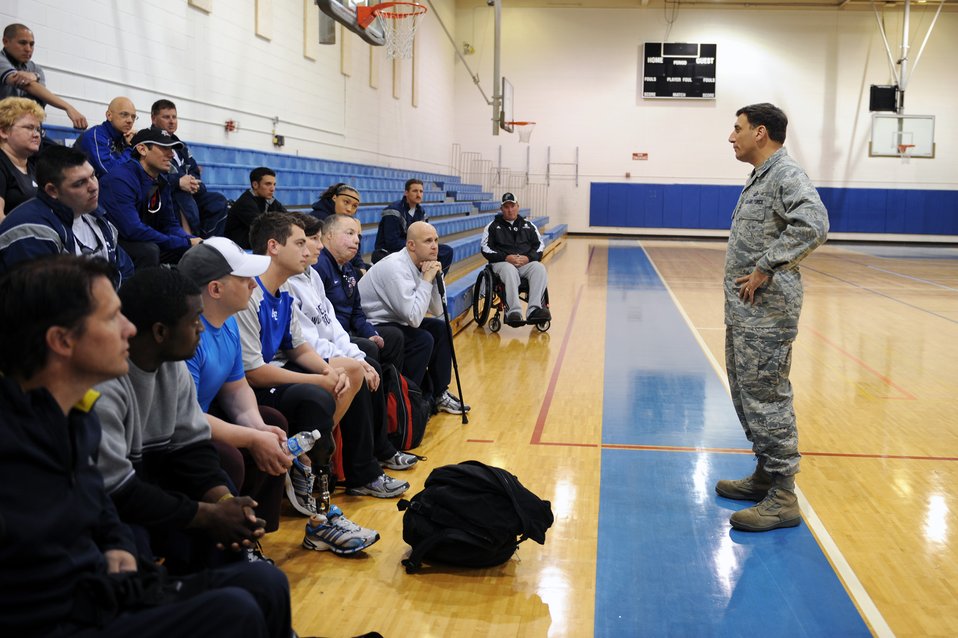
Training camp ends

Col. Rick LoCastro meets with the members of the Air Force team May 7, 2010, during their last day of training at the Air Force Academy in Colorado Springs, Colo., before the start of the inaugural Warrior Games. Colonel LoCastro is the 10th Air Base Wing commander at the Academy. The Warrior Games competition begins May 10 and finishes on May 14 and is taking place at the U.S. Olympic Training Center in Colorado Springs.